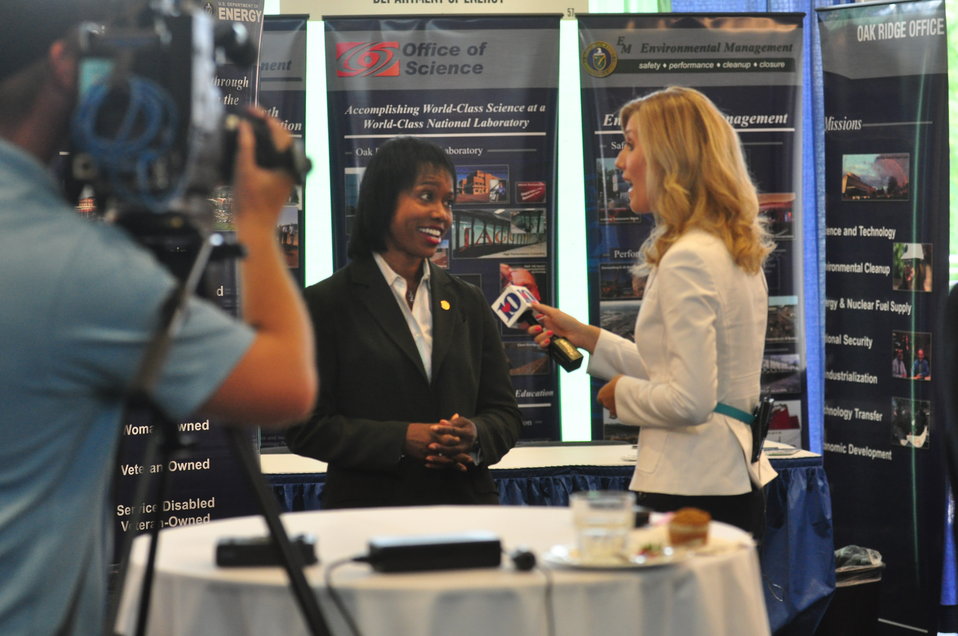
Oak Ridge Small Business Summit July 10 2012

July 10-11 was the Knoxville Tennessee Small Business Summit, held by Oak Ridge National Lab and the Office of Economic Impact and Diversity at the Department of Energy. The local NBC affiliate interviewed Dot Harris the morning of the summit to talk about small business opportunities, and over 360 small business owners attended the event and met with representatives from Oak Ridge National Laboratory, B&W Y-12, UCOR, Oak Ridge Associated Universities, and Wackenhut Services Inc.